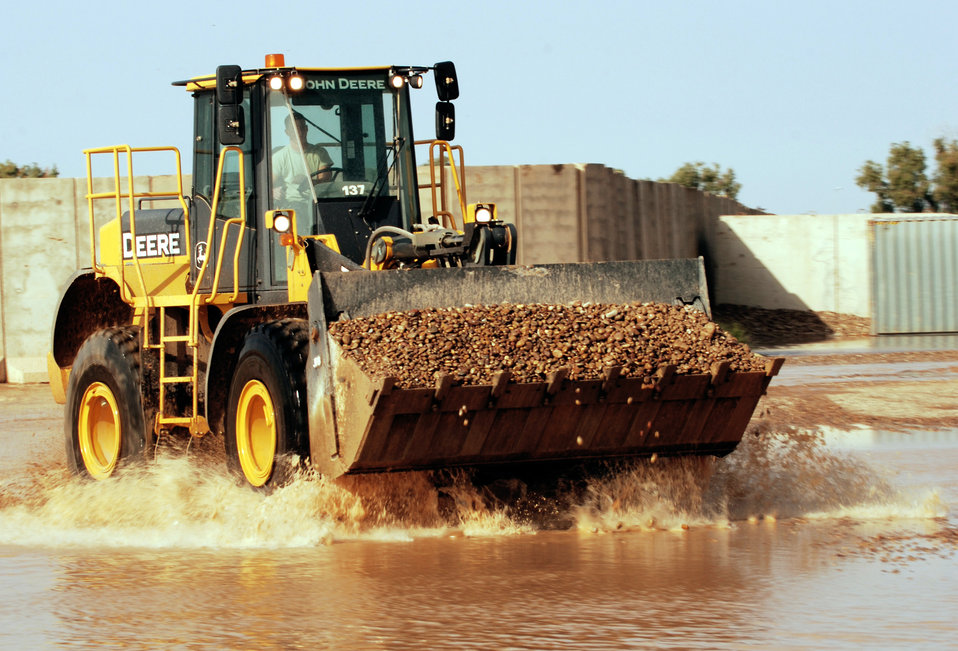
Can't stop the rain

A front-end loader plows through a flooded area with a load of rock to build up low areas Oct. 25 at Joint Base Balad, Iraq. Because rain is infrequent in Iraq, when it does rain, the hardened ground soaks up little water.